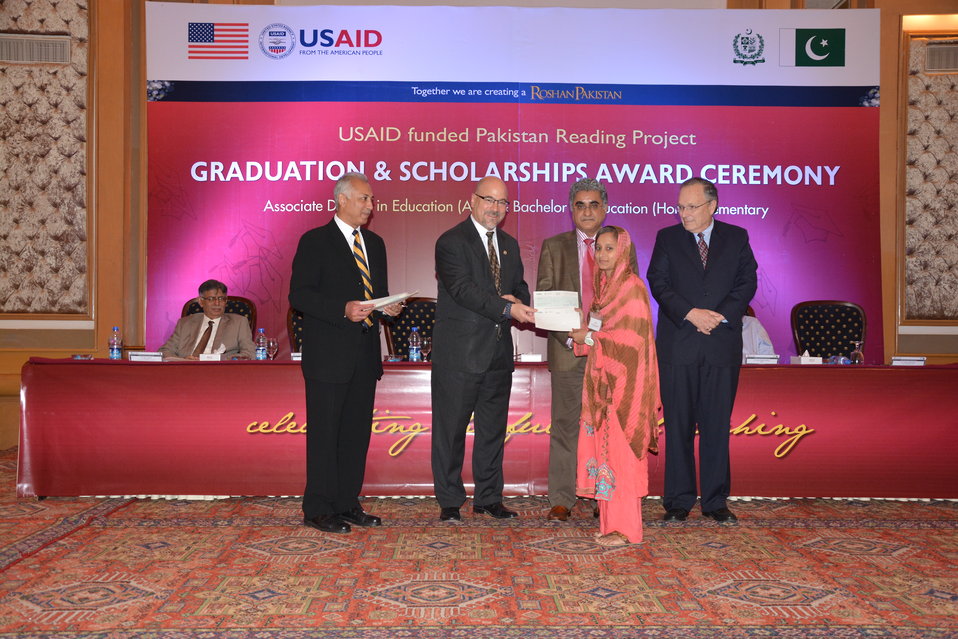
USAID Provincial Director Mr. Leon S. Waskin awarding scholarship to Ms. Mala Bhisham, a student from Mithi, Tharparkar.